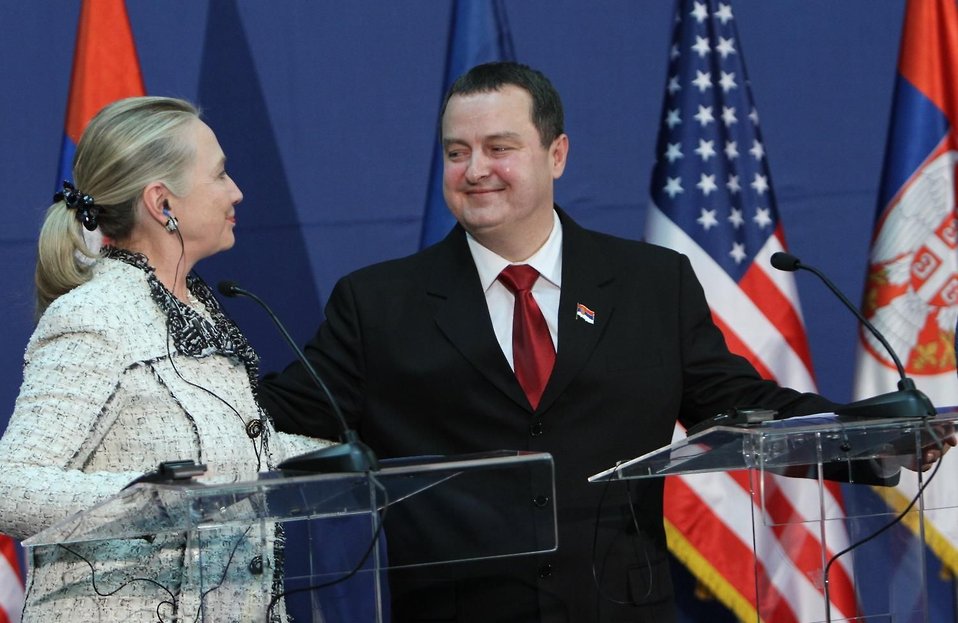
Secretary Clinton, Serbian Prime Minister Dačić, and EU High Representative Ashton Address Reporters

U.S. Secretary of State Hillary Rodham Clinton delivers a joint press statement with Serbian Prime Minister Ivica Dacic and EU High Representative Catherine Ashton in Belgrade, Serbia, October 30, 2012. [FoNet photo]